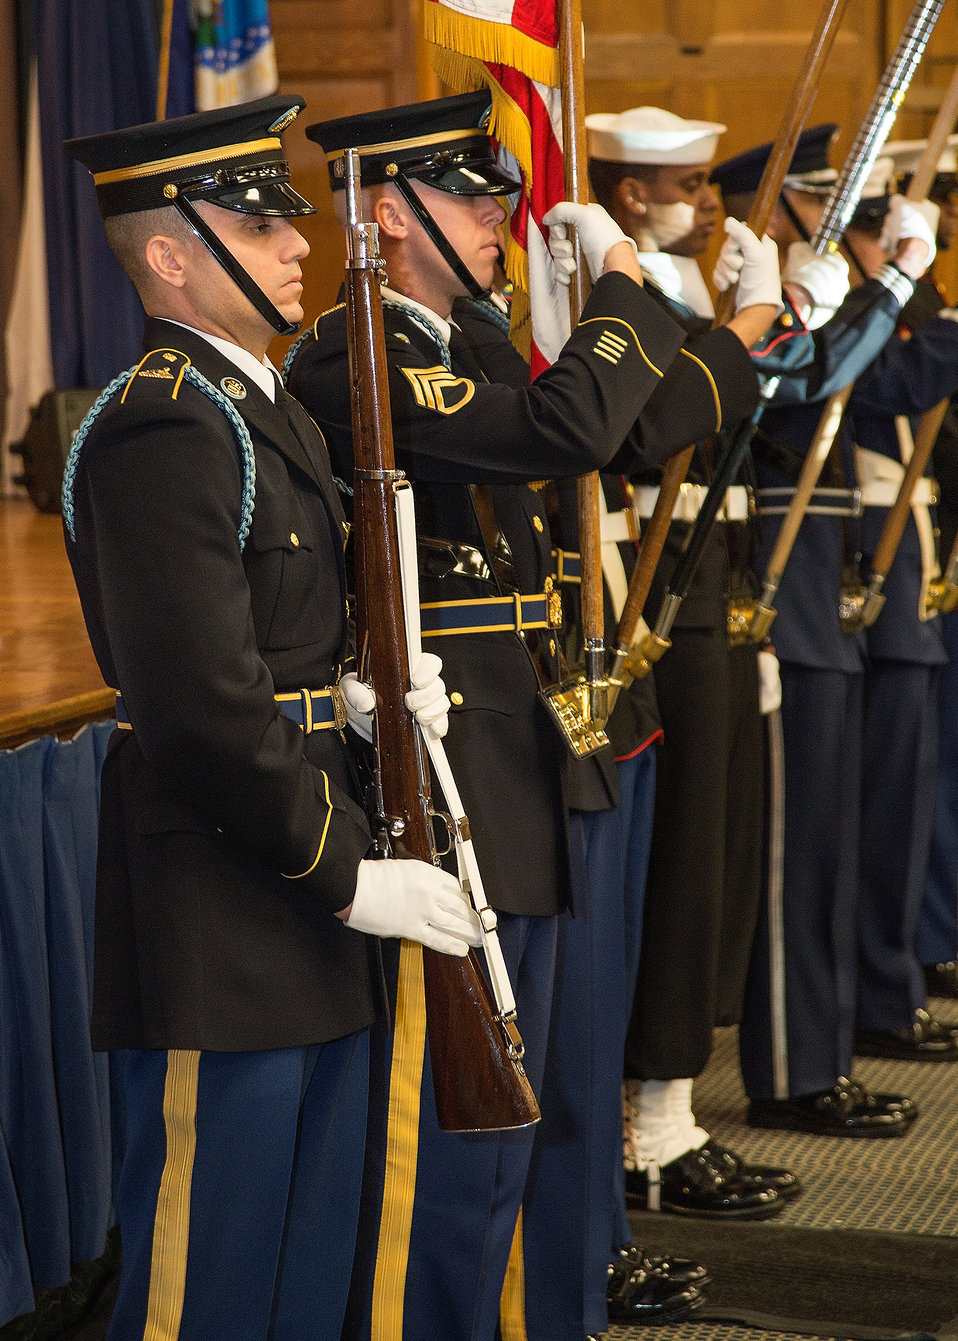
The U.S. Military District of Washington Joint Armed Forces Color Guard presents the colors at the U.S. Department of Agriculture's (USDA) Dr. Martin Luther King Jr. and National Service Day in Washington, D.C. on Wednesday, Jan. 15, 2014.